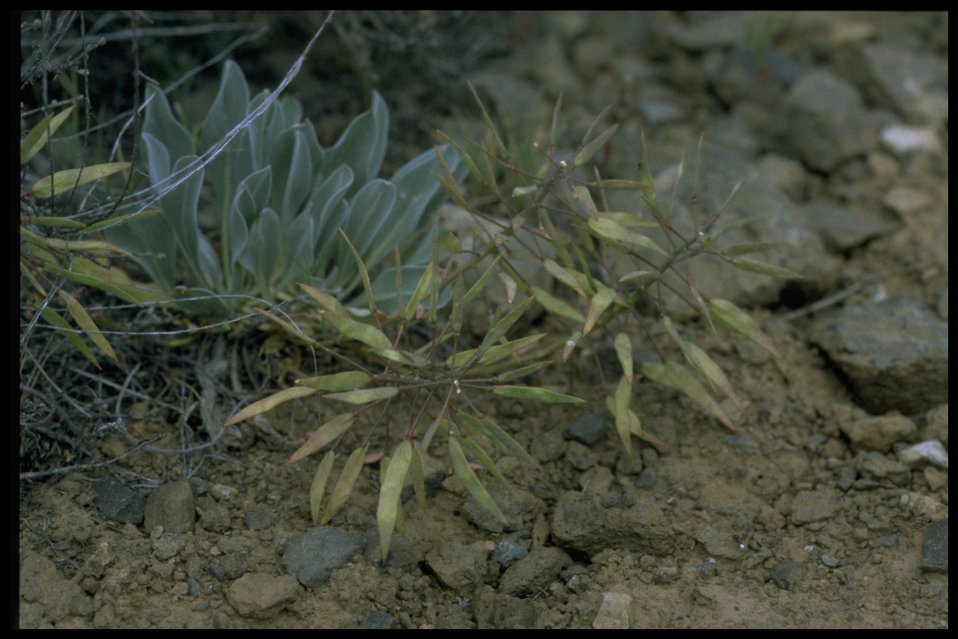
Farshot of daggerpod (Phoenicaulis cheiranthoides) in fruit.